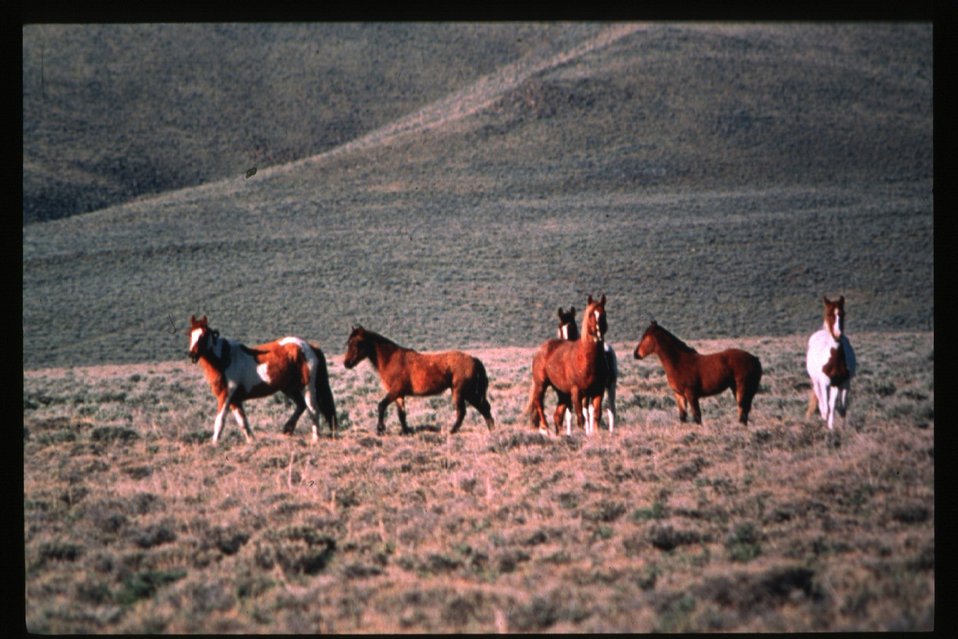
Wild Horse and Burro Adoption Program Gathering Roundup Corral Four Rivers Field Office LSRD Lower Snake River District